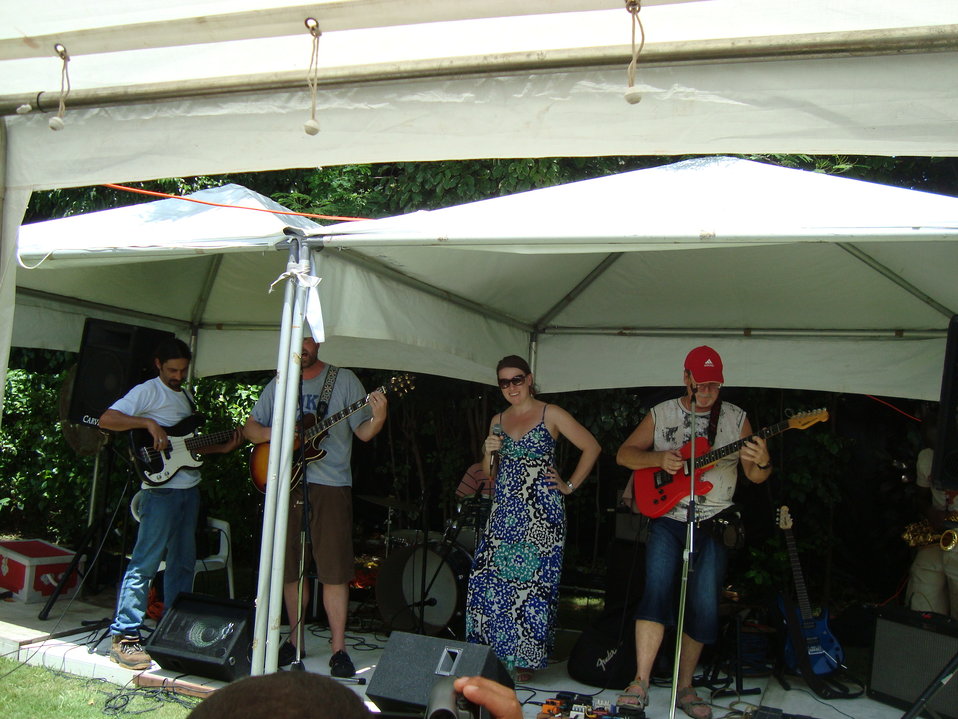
The Yubanos rock out with over 250 guests, including U.S. personnel and local staff, at the United States Interest Section Havana in Cuba's U.S. Independence Day celebration at Chief of Mission Jonathan D. Farrar's residence in Havana, Cuba, on July 2, 2010.